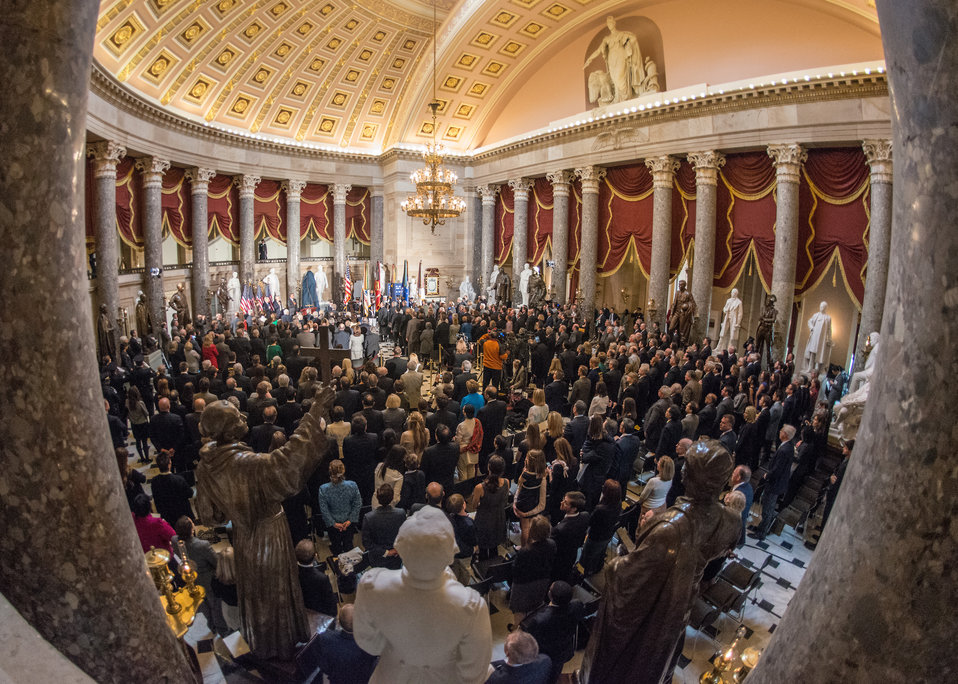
The audience stands as the U.S. Armed Forces Color Guard presents the Colors at the singing of the National Anthem, during the dedication of the Dr. Norman E. Borlaug statue in the National Statuary Hall at the U. S. Capitol in Washington, D.C. on Tuesday, Mar. 25, 2014. Unveiling the statue will be done by Minority Leader of the House of Representatives Nancy Pelosi, Mr. Bill Borlaug (son of Dr. Borlaug), Agriculture Secretary Tom Vilsack, Speaker of the House of Representatives John Boehner, Iowa Governor Terry Branstad and Majority Leader of the U.S. Senate Harry Reid. Today commemorates 100 years since Dr. Borlaug’s birth. Through his scientific and humanitarian achievements, Nobel Laureate Dr. Norman E. Borlaug (1914-2009) has been credited with saving millions of people from starvation in developing countries. His collaborative work with scientists in Mexico on a high-yielding, disease resistant dwarf wheat sparked the Green Revolution of the 1960s. The National Statuary Hall Collection in the U.S. Capitol is composed of statues donated by individual states to honor persons notable in their history.